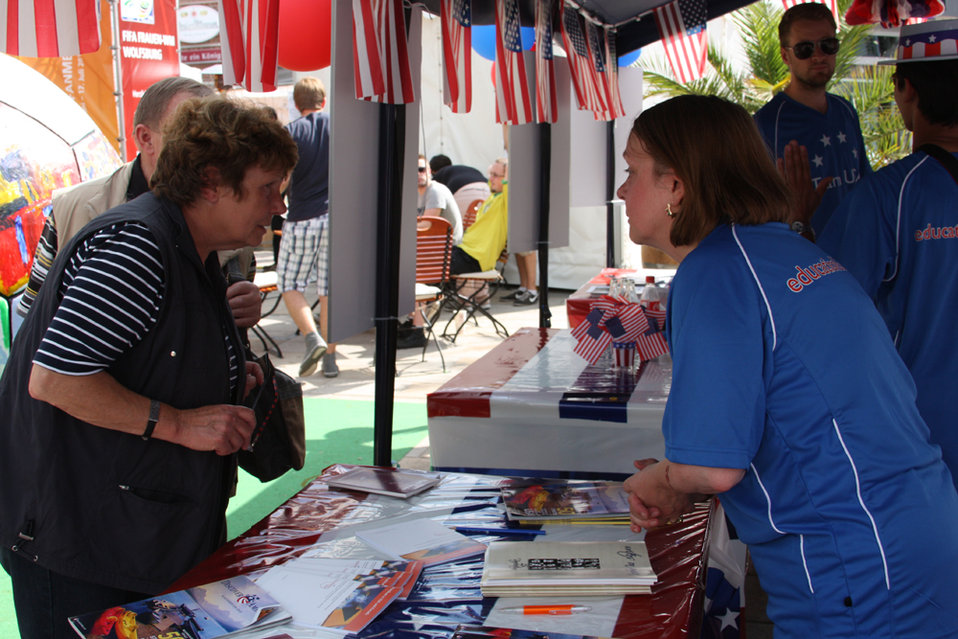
Cultural Affairs Assistant Gerda MierswaSilva speaks with guests at the Consulate Booth at the 'Fanmeile' in Wolfsburg, Germany, on July 6, 2011.